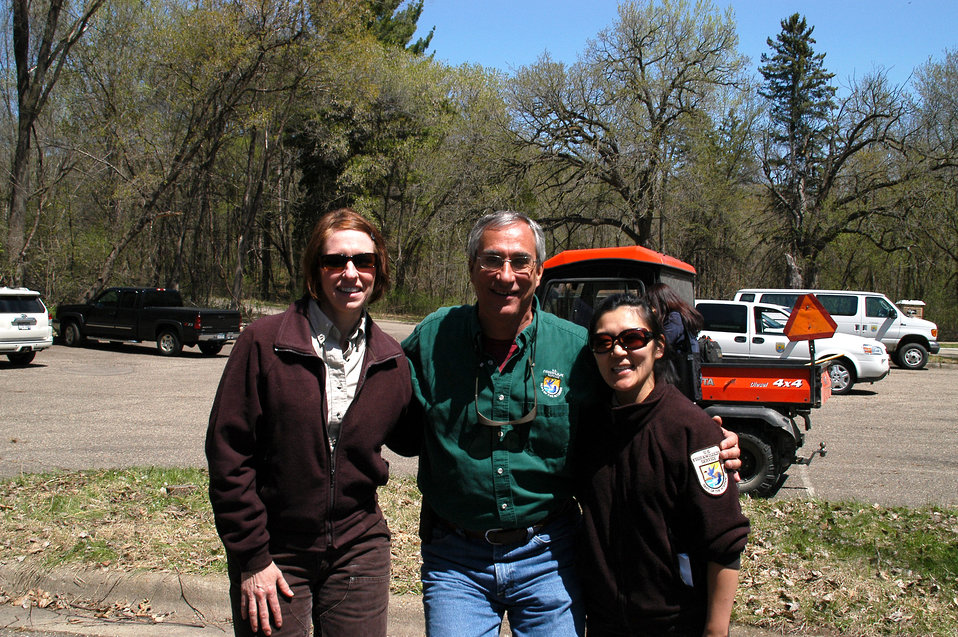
Regional Director Tom Melius with Visitor Services Manager Beth Ullenberg

Regional Director, Tom Melius, poses with MN Valley NWR Staff, Visitor Services Manager Beth Ullenberg (left), and Sarah Inouye, who helped to make the day possible!